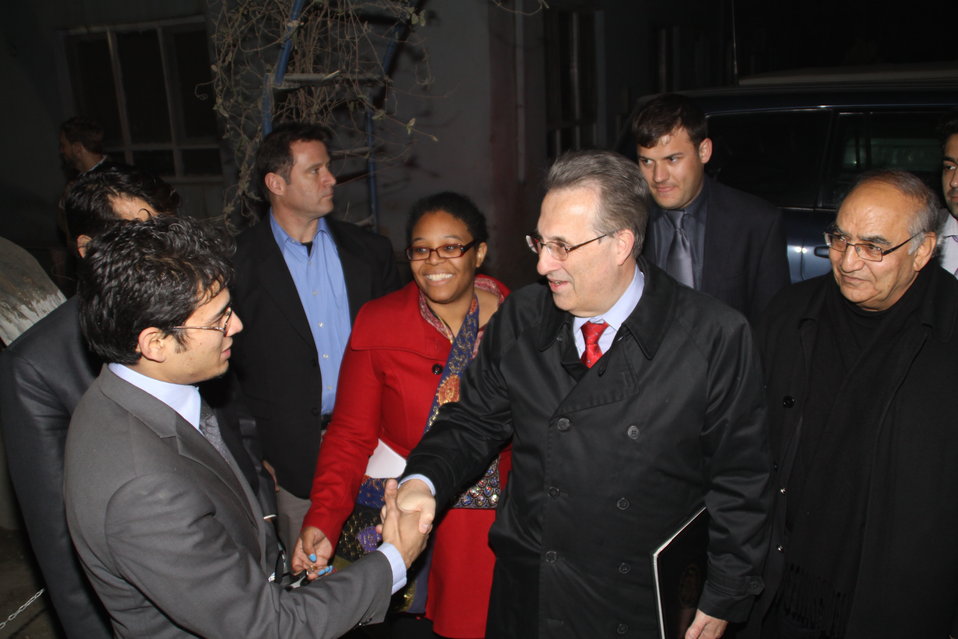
U.S. Ambassador E. Anthony Wayne